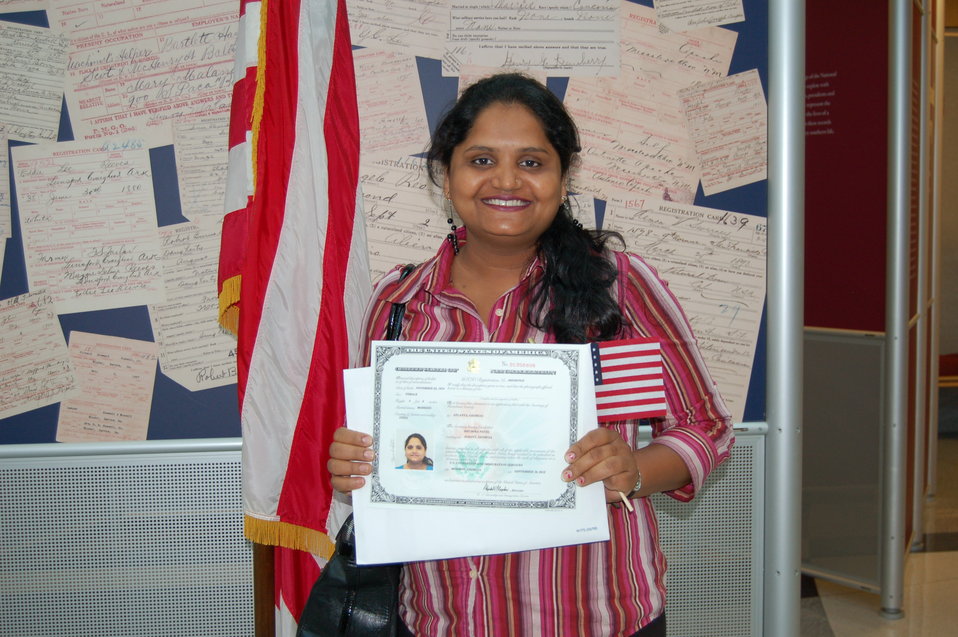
New Citizens